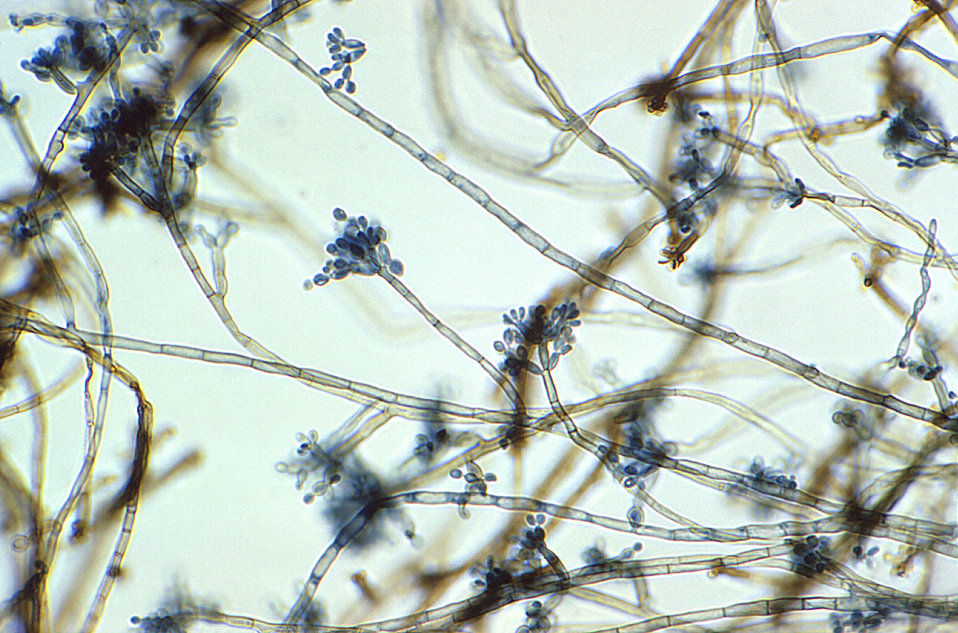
Magnified 400X, this slide culture photomicrograph highlighted some of the ultrastructural morphology exhibited by numbers of Cladosporium sphaerospernum fungal organisms. Observable in this view are many of the fungi's reproductive structures including its conidiophores, and clustered atop these stalks, its asexual spores, or conidia.